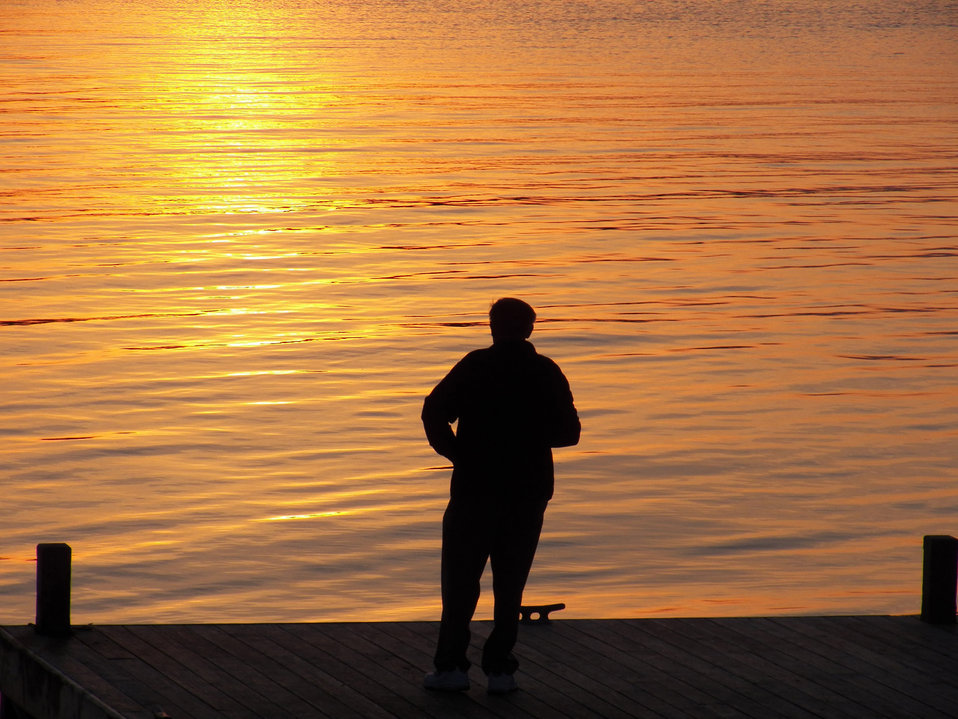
The perfect sunset

Photo of a person observing sunset over the water.